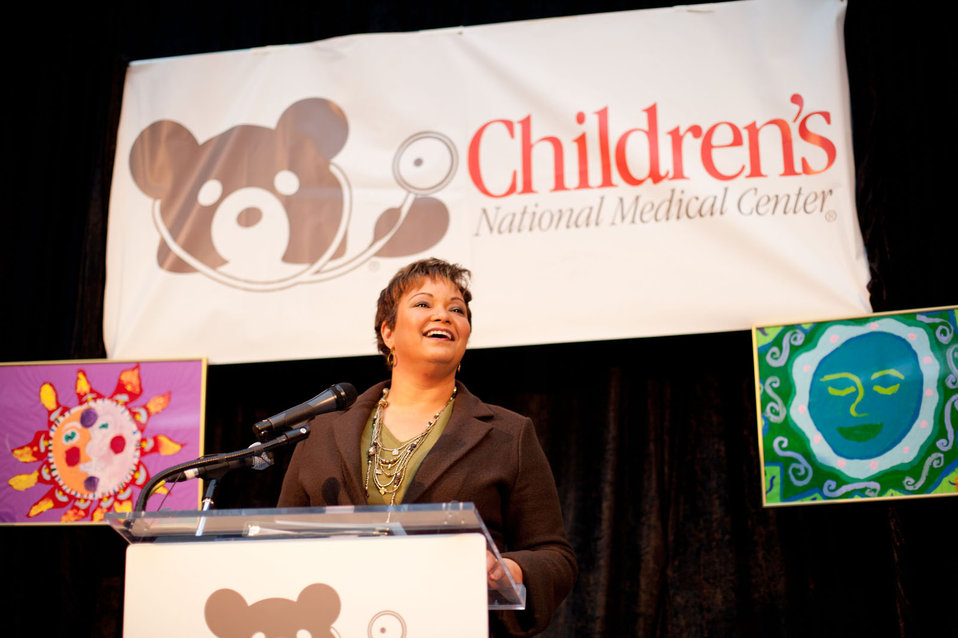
December 12, 2011 EPA Administrator Makes Clean Air Act Announcement

On December 12, 2011 EPA announced the first national standards to protect American families from power plant emissions of mercury and toxic air pollution like arsenic, acid gas, nickel, selenium, and cyanide.

EPA estimates that the new safeguards will prevent 11,000 premature deaths and 4,700 heart attacks a year. The standards will also help America' children grow up healthier -- preventing 130,000 cases of childhood asthma symptoms and about 6,300 fewer cases of acute bronchitis a month children each year.